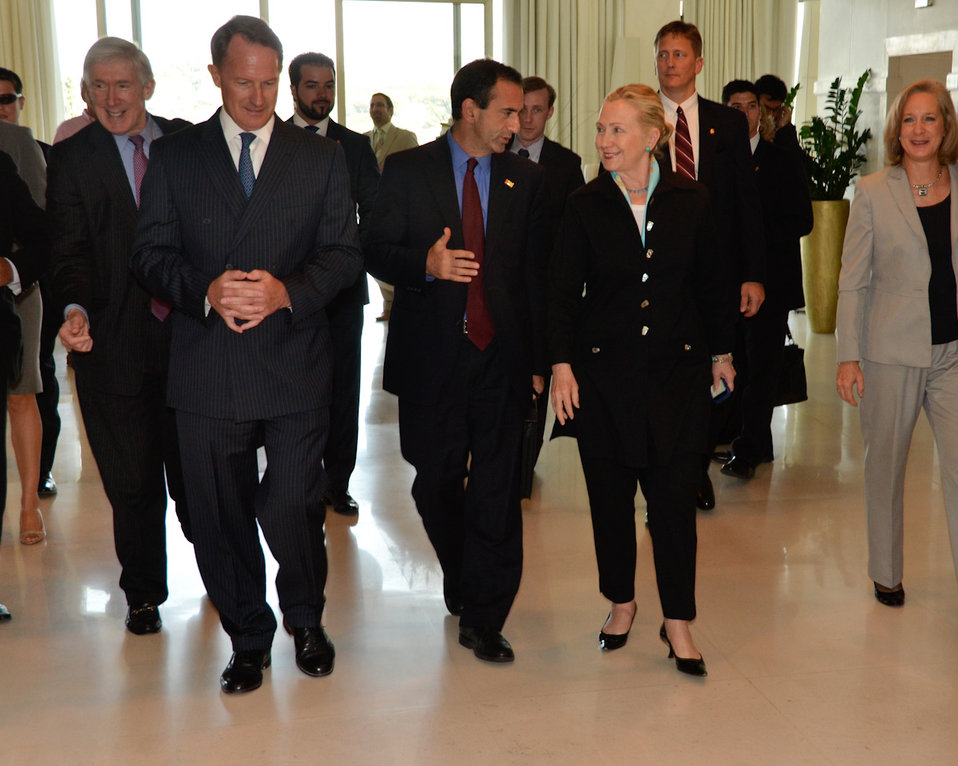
Secretary Clinton Chats With Assistant Secretary Gordon and Ambassador Smith

U.S. Secretary of State Hillary Rodham Clinton chats with Assistant Secretary of State for European and Eurasian Affairs Philip Gordon, center, and U.S. Ambassador to Greece Daniel B. Smith, left, before speaking with Embassy Athens staff and families in Athens, Greece, on July 18, 2011.